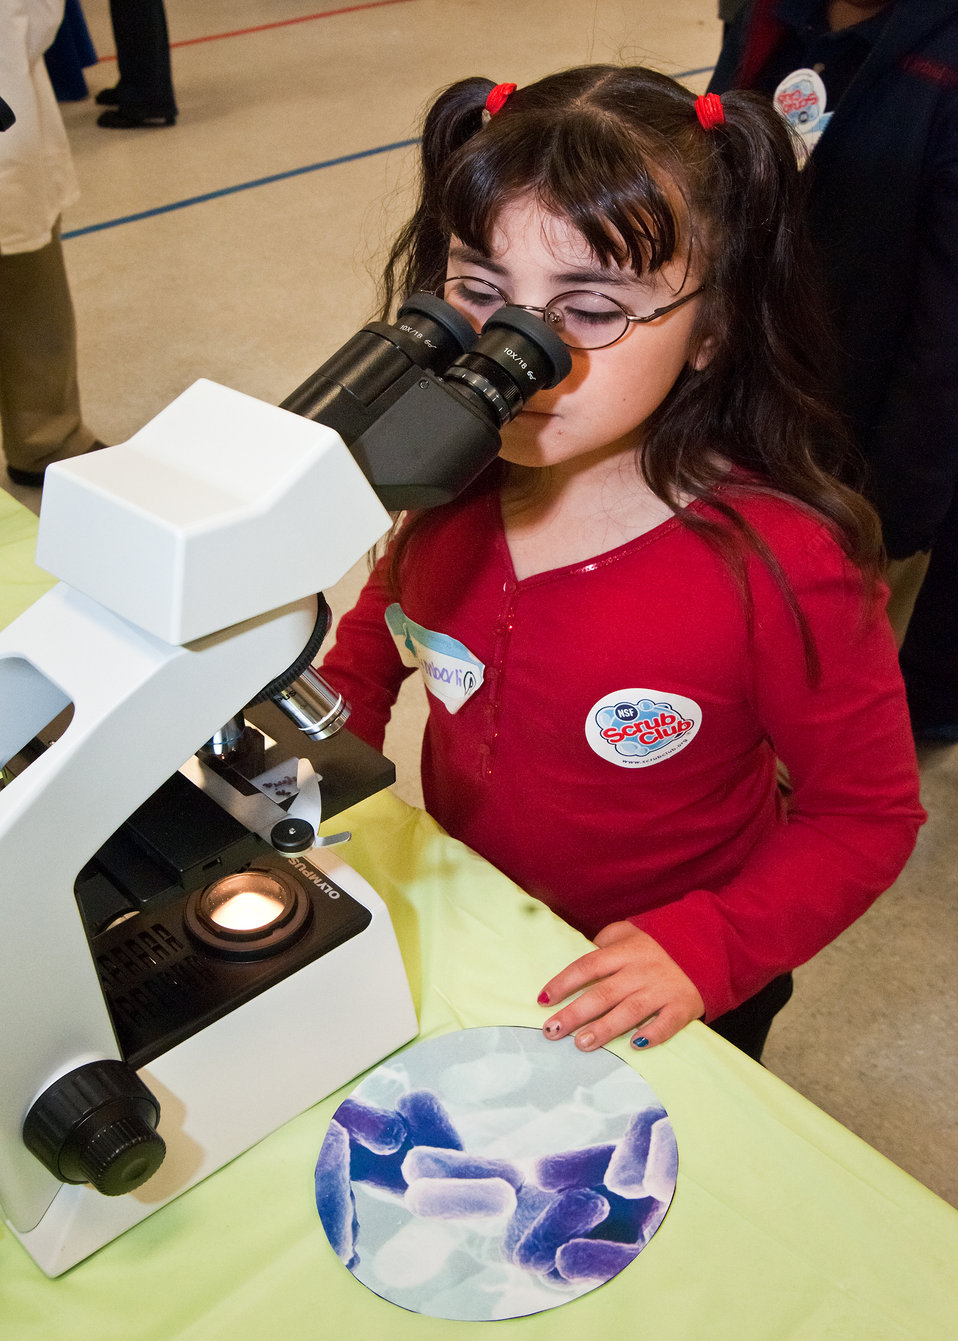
Nancy Teo Quintana a first grade student from Ms. Lindsay Gormus’s class at Maryland City Elementary School in Laurel, MD, looks through a microscope to view listeria and salmonella, two of the four most common bacteria found in food. The other two bacteria are campylobacter and e. coli. The United States Department of Agriculture, Food Safety Inspection Service held a Food Safety Education Camp at Maryland City Elementary School, on Thursday, May 5, 2011.